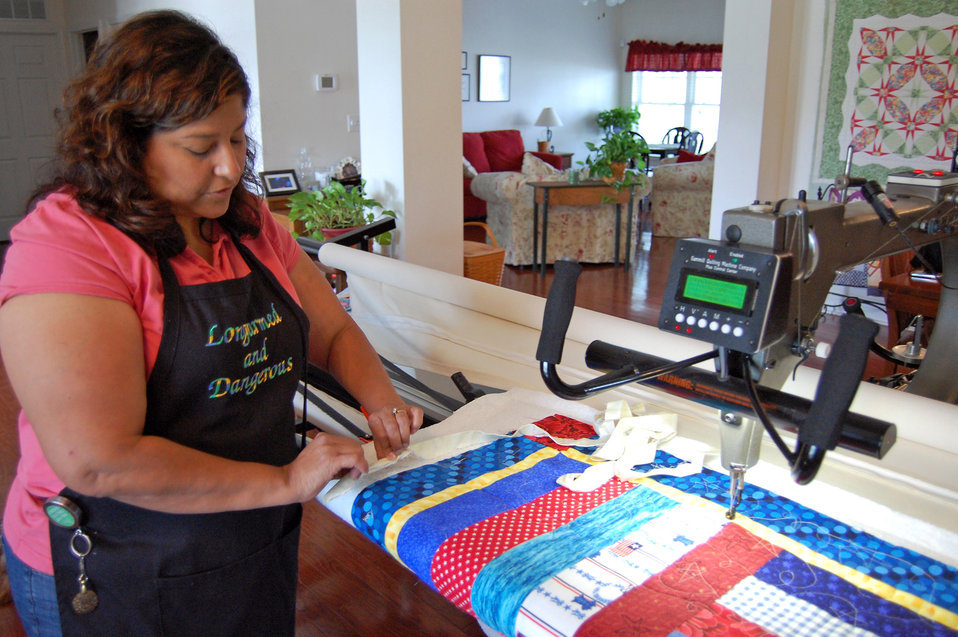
Quilts of Valor a comfort for complex wartime emotions

Irene Hafer checks the edge on a Quilts of Valor quilt June 24 in her home studio in Dover, Del. Her apron reads